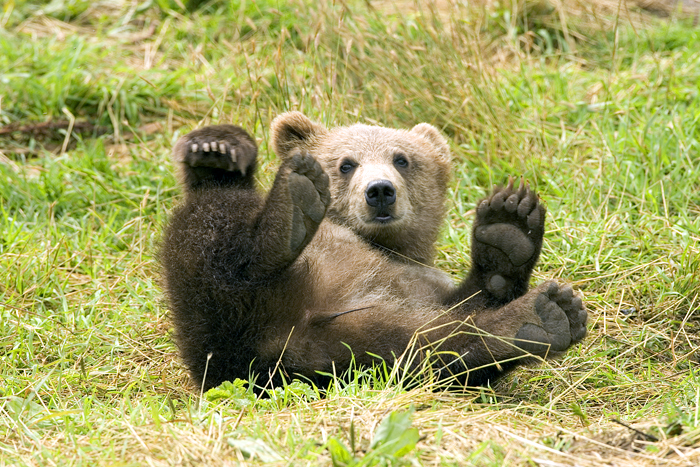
Brown bear cub.